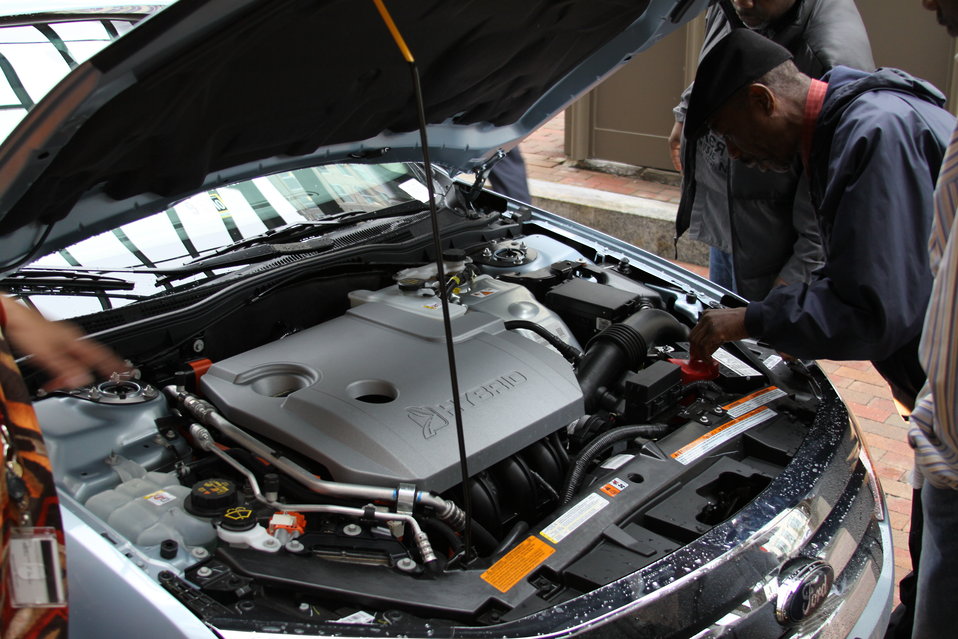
FCC Official Vehicle Tour